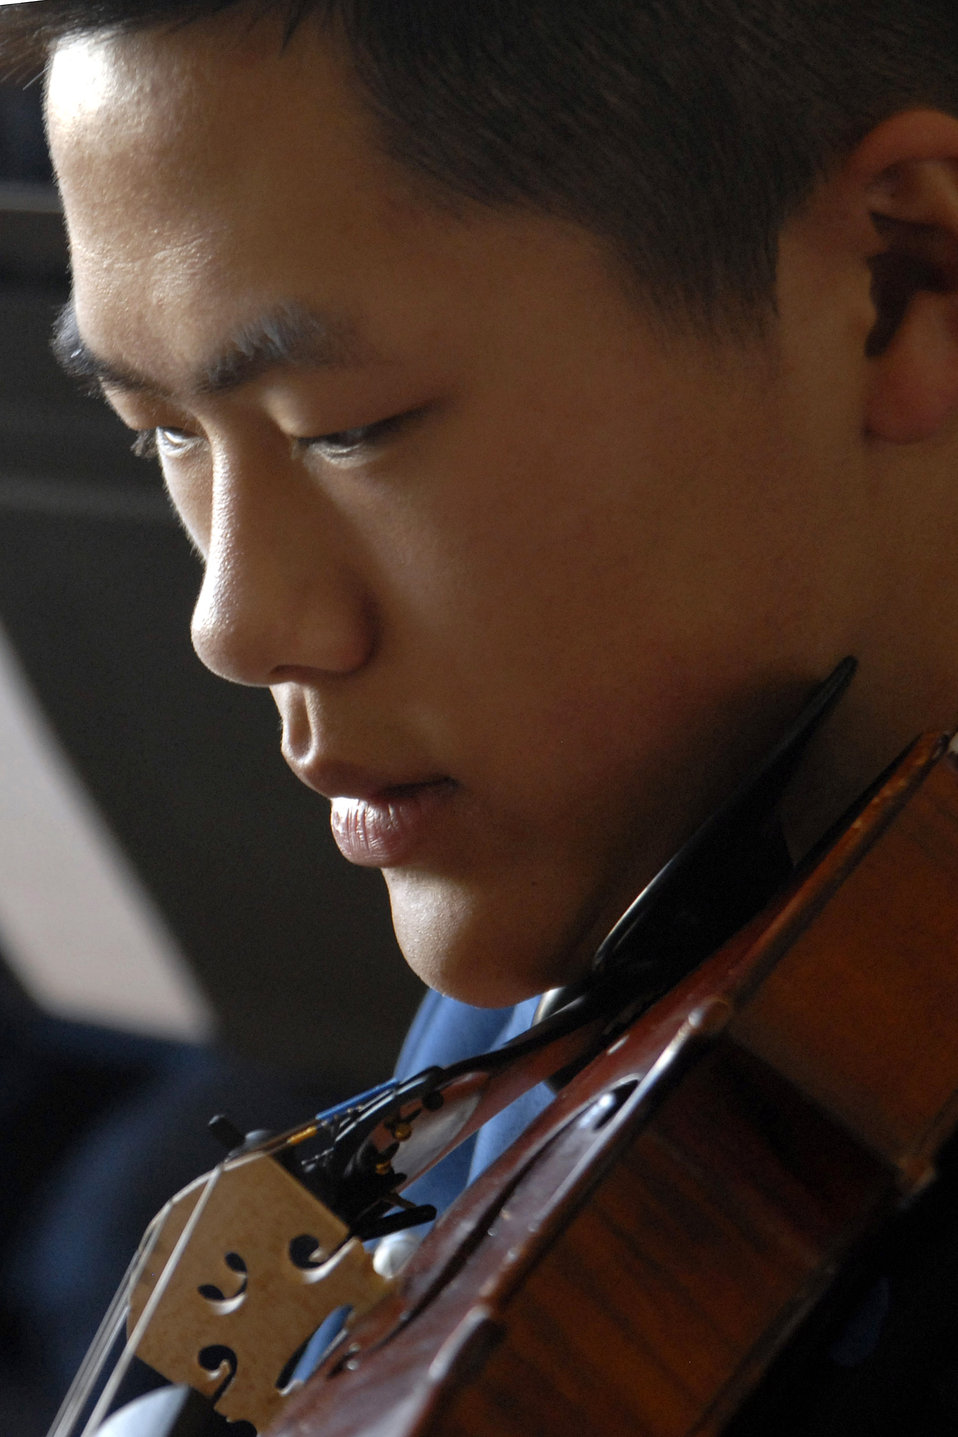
Academy salutes founders

Freshman Joshua Ku plays the viola during the cadet sponsor social held April 5 in Arnold Hall at the U.S. Air Force Academy in Colorado. The social honored the 3,500 cadet sponsors; those men, women and families who open their hearts and homes to members of the cadet wing to enhance cadet life and develop officers of character. Cadet Ku is a member of the Cadet Orchestra.